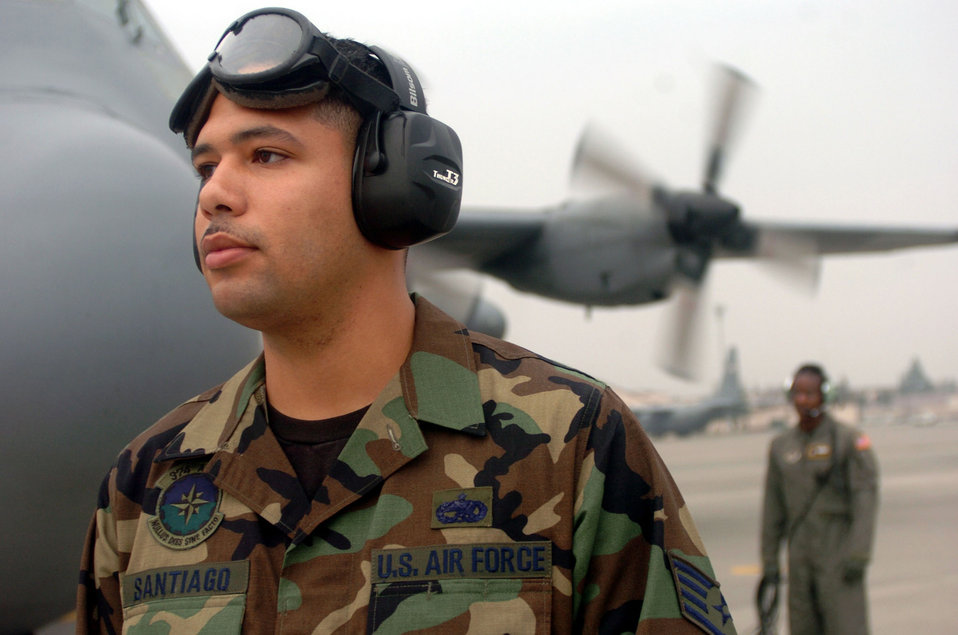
Airmen brandishing a 'Keen Sword'

YOKOTA AIR BASE, Japan -- Staff Sgt. Ricardo Santiago, (foreground) and Master Sgt. Robin Baird conduct a pre-flight check of their C-130 Hercules before a cargo airdrop mission during exercise Keen Sword 2005 here Nov 11. Sergeant Santiago is a crew chief and Sergeant Baird is a loadmaster. Both are assigned to the base's 36th Airlift Squadron. Some of the exercise events and objectives include dissimilar aircraft training, noncombatant evacuation operations, base security and force protection, search and rescue, and close-air support. The exercise is being conducted at U.S. and Japanese military bases throughout Japan.